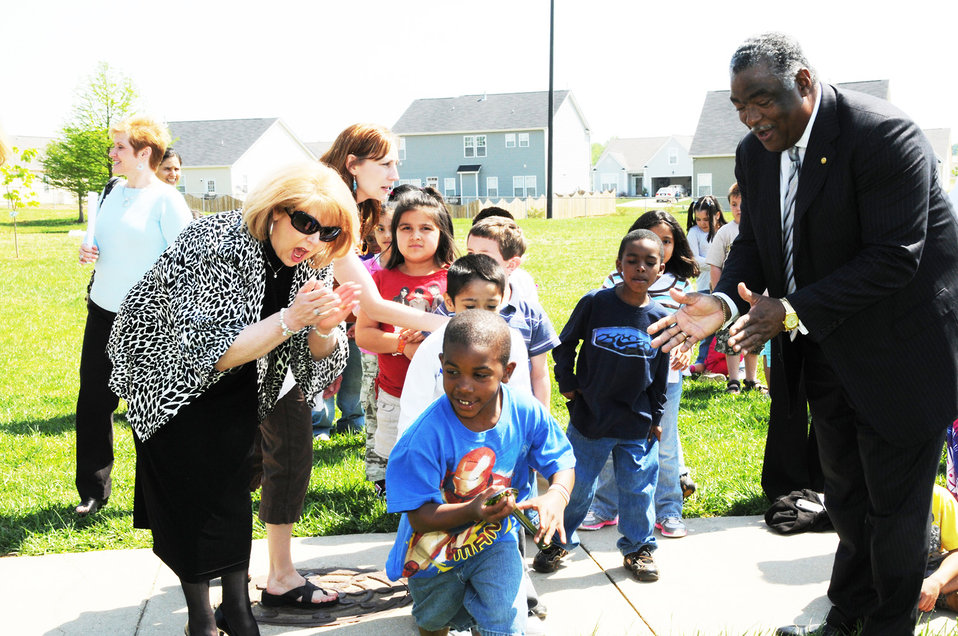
Lets Move - DSC 2219a

Dr. Lynn Harvey with NC Department of Public Instruction Child Nutrition Services and Southeast Regional Administrator Donald Arnette with USDA Food and Nutrition Service encourages Thomasville Primary School students in the “strawberry in the spoon” race as part of the school’s Let’s Move program inspired by First Lady Michelle Obama